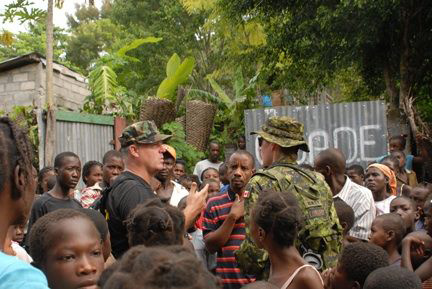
This image captured in the municipality of Ennery, Haiti, September 22, 2008, depicts U.S. Public Service (USPHS) Lt. Cmdr. Gary Brunette, and Canadian Army Capt. Gillian Batt, as they were asking the locals about the whereabouts of their area medical clinic. Lt. Cmdr. Brunette and Capt. Batt had both embarked on this humanitarian effort aboard the USS Kearsarge (LHD 3).